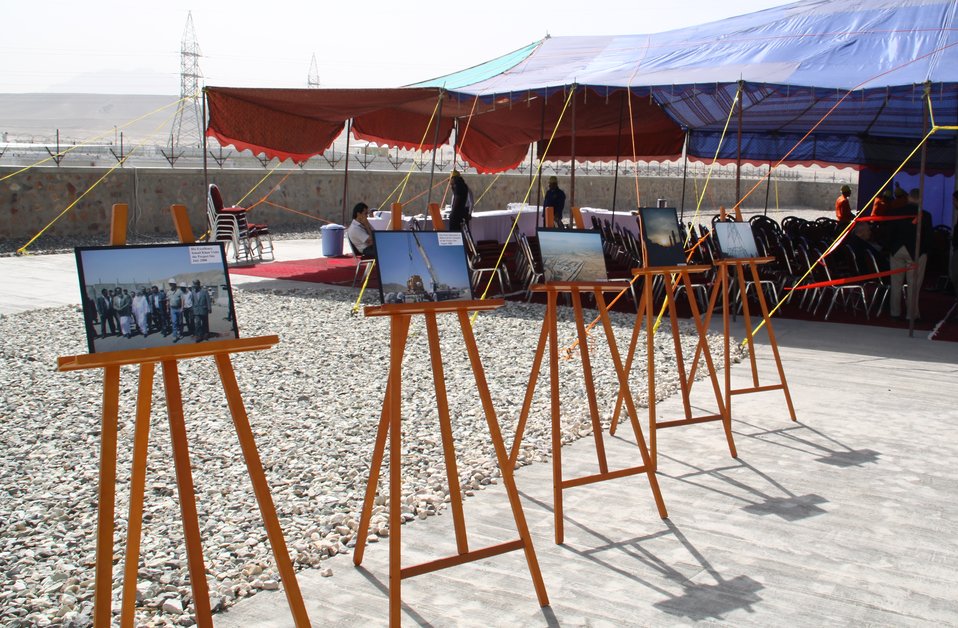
105 MW Tarakhil Power Plant Handover